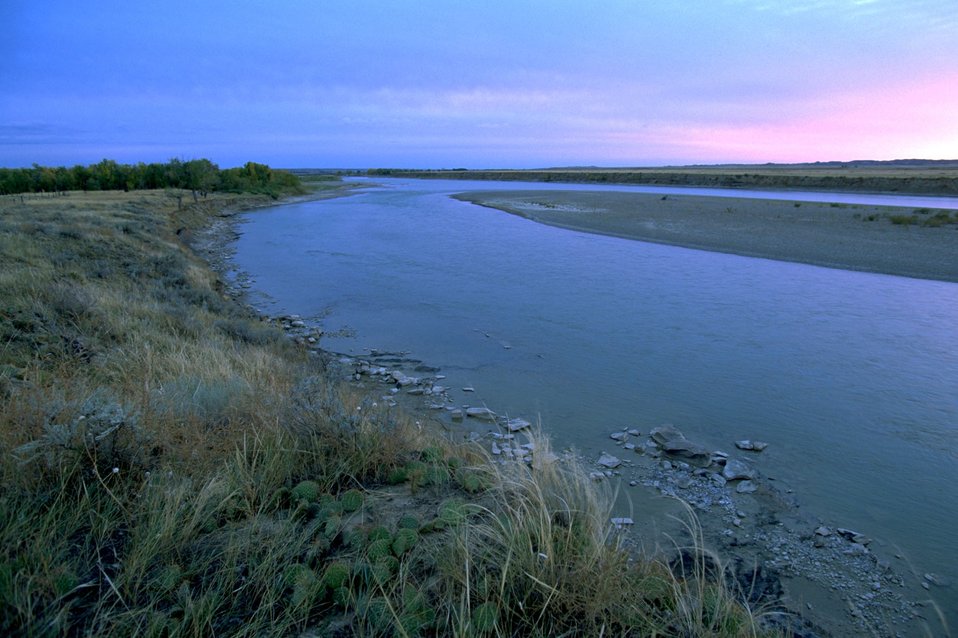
Yellowstone River just below the confluence of the Powder River